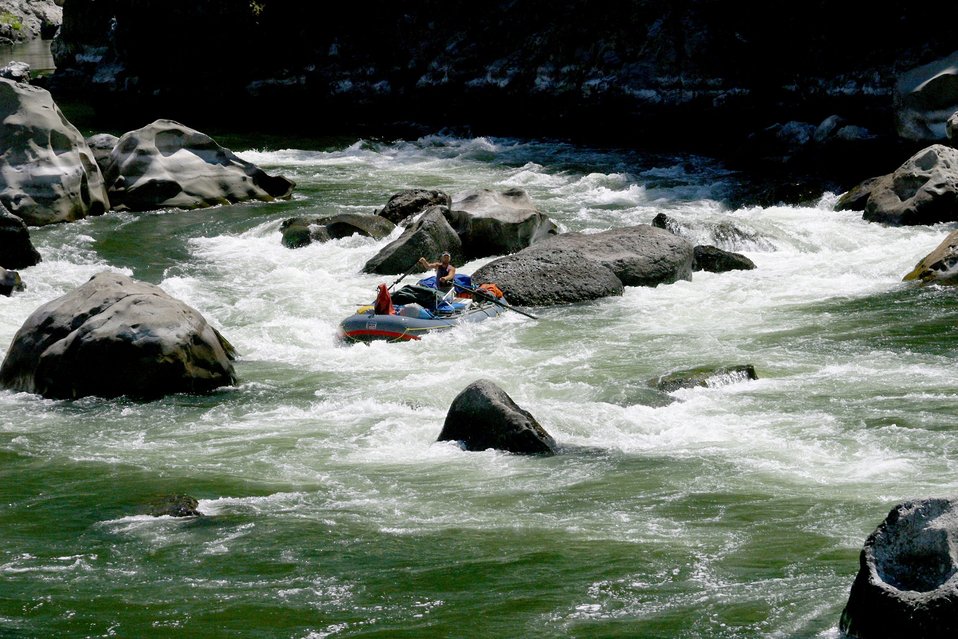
Boaters negotiate Blossom Rapids.